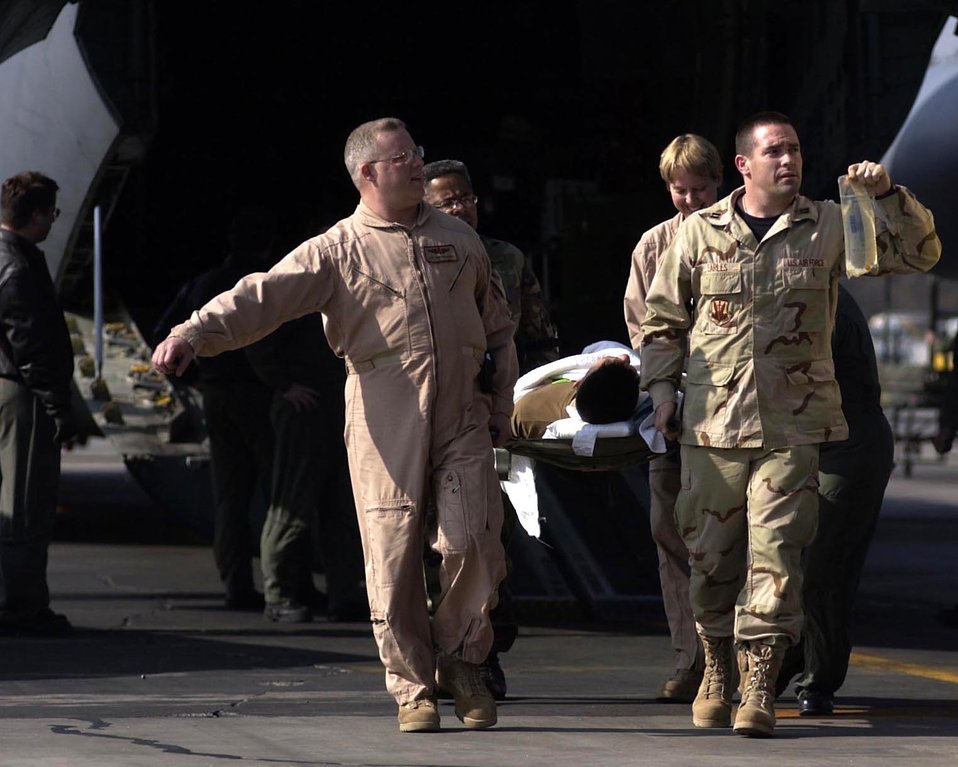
Aeromedical evacuation

RAMSTEIN AIR BASE, Germany -- A wounded soldier is carried off a C-141 Starlifter by members of the 932nd Aeromedical Evacuation Squadron from Scott Air Force Base, Ill., along with members of the 86th Aeromedical Staging Facility here March 24. Twelve soldiers wounded during Operation Iraqi Freedom were evacuated to Germany for additional medical treatment.